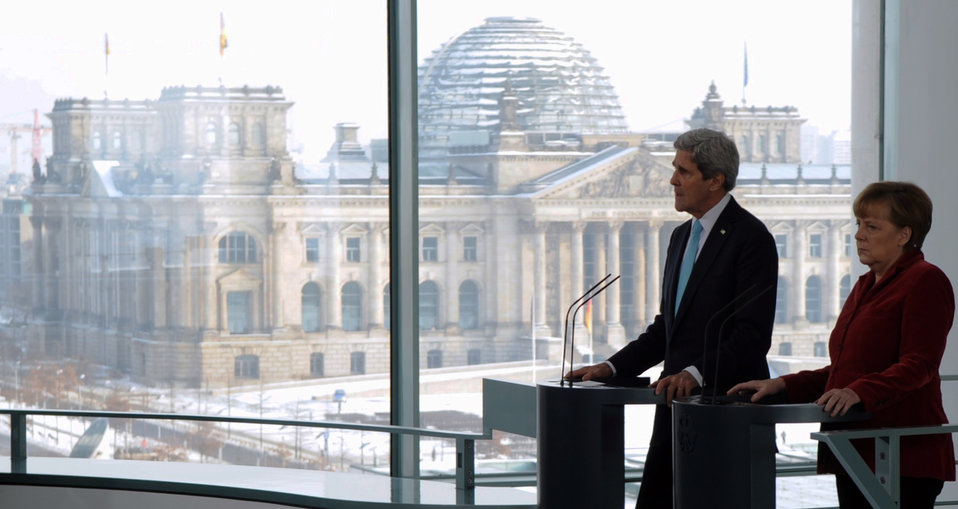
Secretary Kerry, German Chancellor Merkel Address Reporters in Shadow of Reichstag

U.S. Secretary of State John Kerry and German Chancellor Angela Merkel deliver statements to reporters against a backdrop of the Reichstag Building in Berlin, Germany, on January 31, 2014.